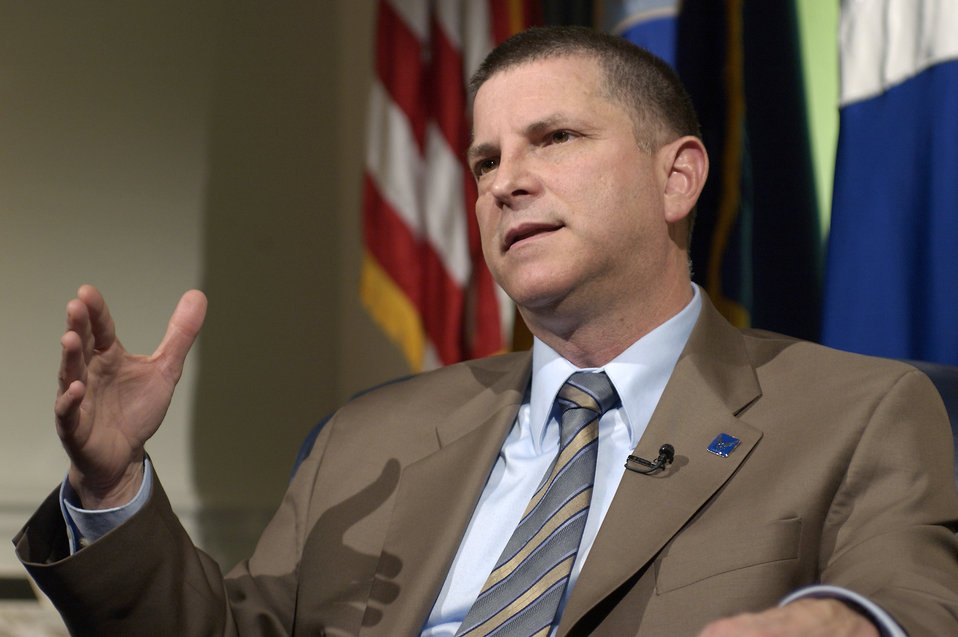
Dominguez: Recapitalization No. 1 priority

WASHINGTON -- Michael L. Dominguez, acting secretary of the Air Force, outlines his five priorities for the service, beginning with the recapitalization of the fleet.